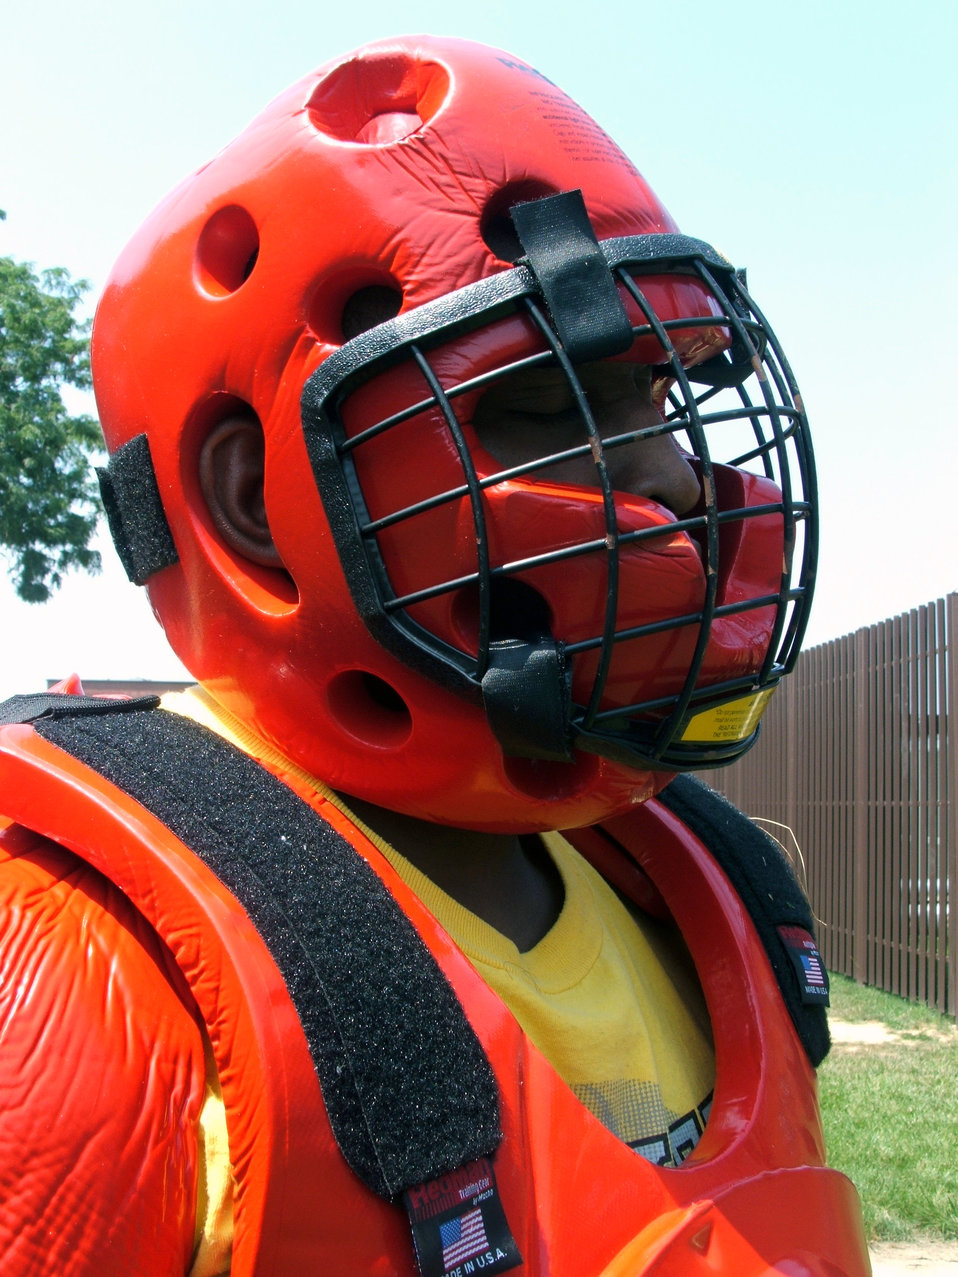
Phoenix Raven

Staff Sgt. Rudolph Stuart is dressed in a